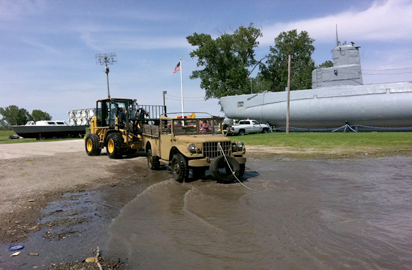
Offut helps Freedom Park

Larry Simbro and Michael Wangberg move items out of oncoming flood waters at Freedom Park here June 1, 2011, in Omaha, Neb. Freedom Park is an outdoor museum that features numerous military exhibits and has been overcome by rising waters of the Missouri River. Members of Offutt Air Force Base moved museum artifacts to higher ground until the flood waters recede. Mr. Simbro and Mr. Wangberg are heavy equipment operators with the 55th Logistics Readiness Squadron.